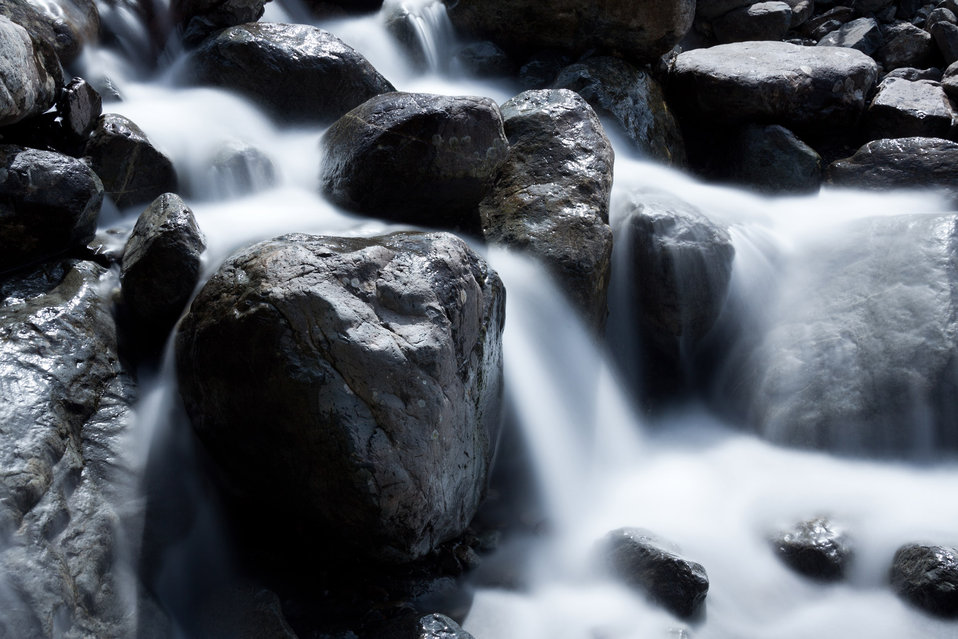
Waterfall among rocks

A waterfall among rocks.